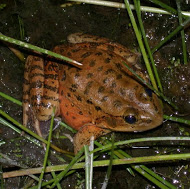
California red-legged frog

Scientific name: Rana draytonii
Status: Threatened